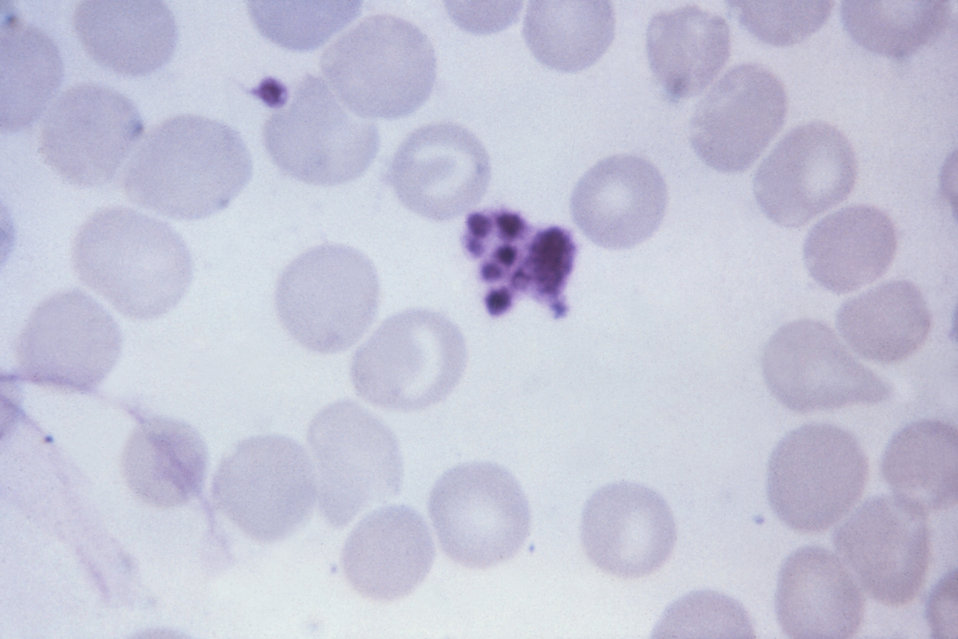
This thin film Giemsa stained micrograph depicts a platelet artifact that could be mistaken for a malaria parasite.